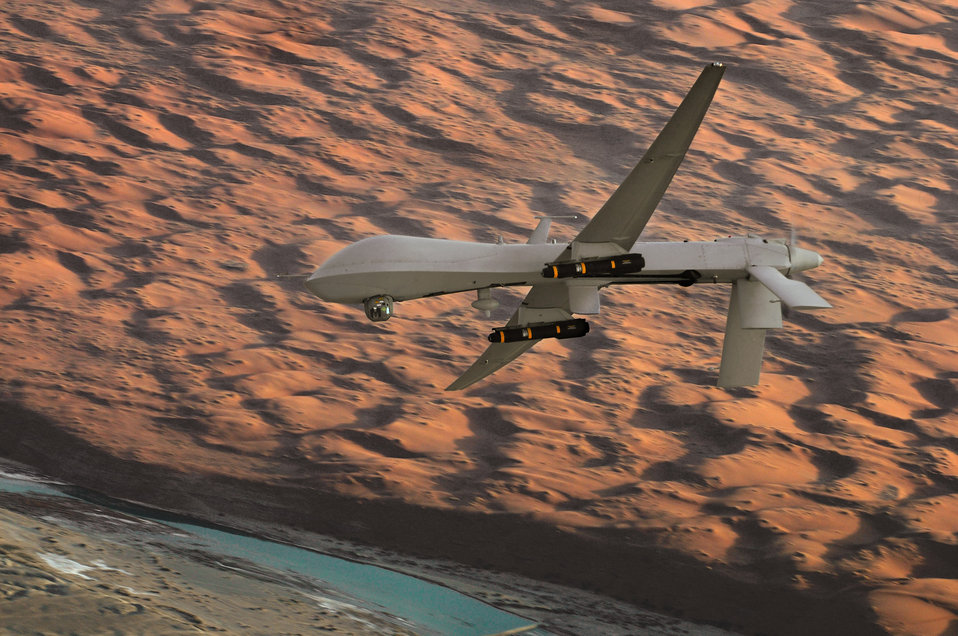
Lethal presence

An MQ-1 Predator unmanned aircraft, armed with AGM-114 Hellfire missiles, flies a combat mission over southern Afghanistan. The MQ-1 is deployed in Operation Enduring Freedom providing interdiction and armed reconnaissance against critical, perishable targets.